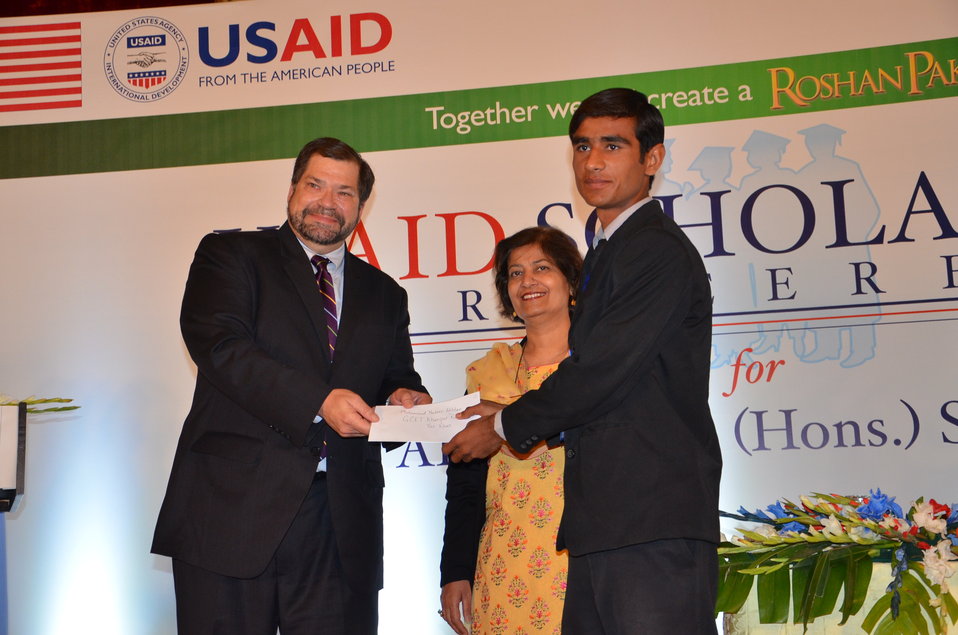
Mr. Bakken awarding USAID scholarship to student